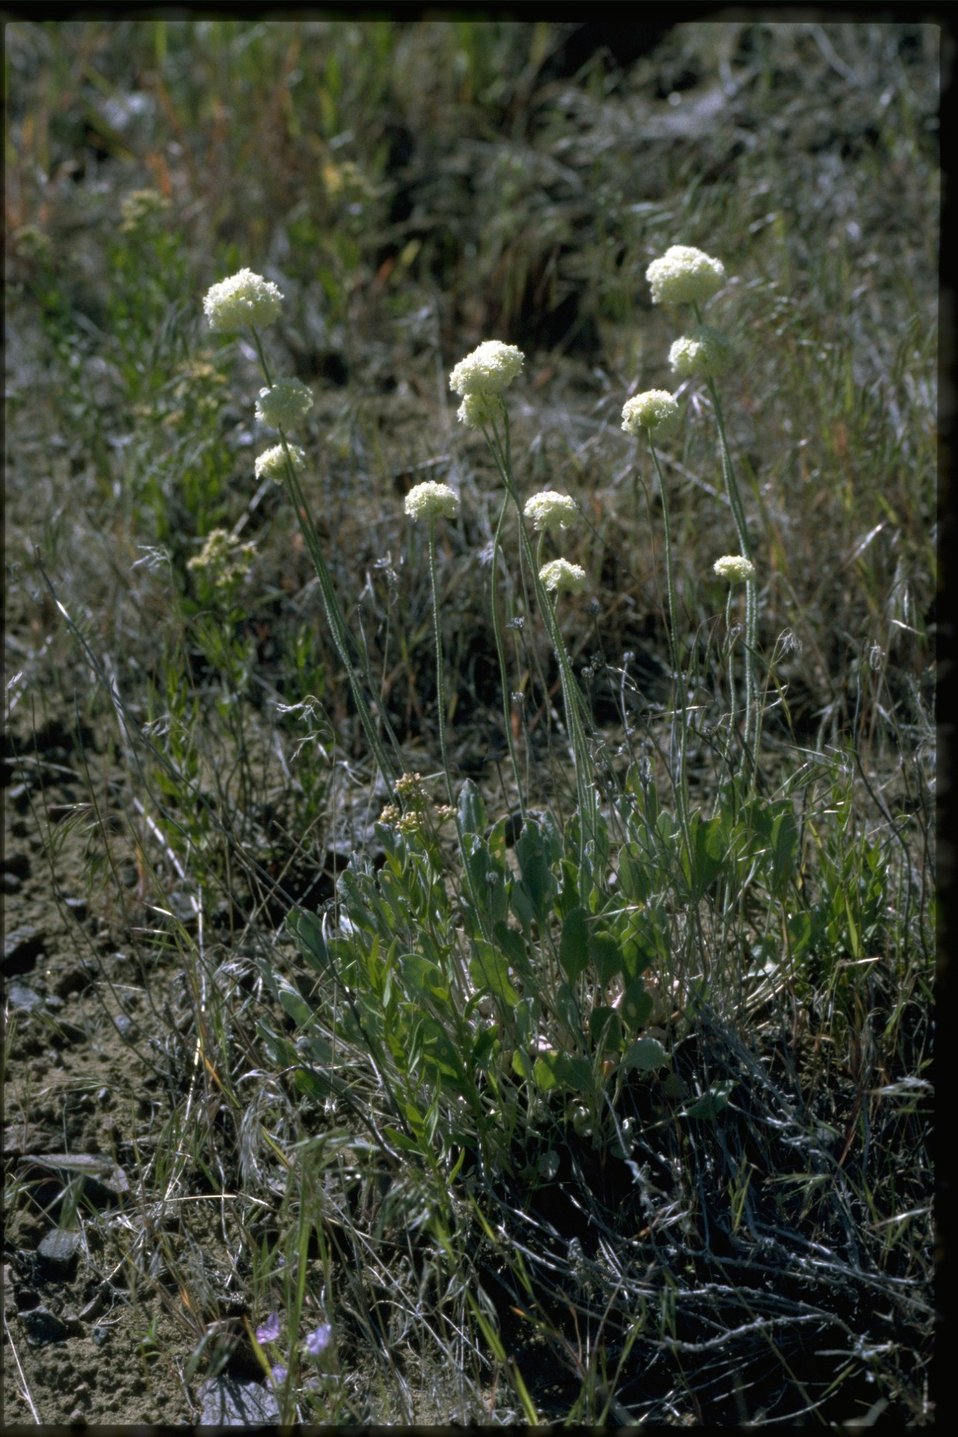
Farshot of Erigonum.